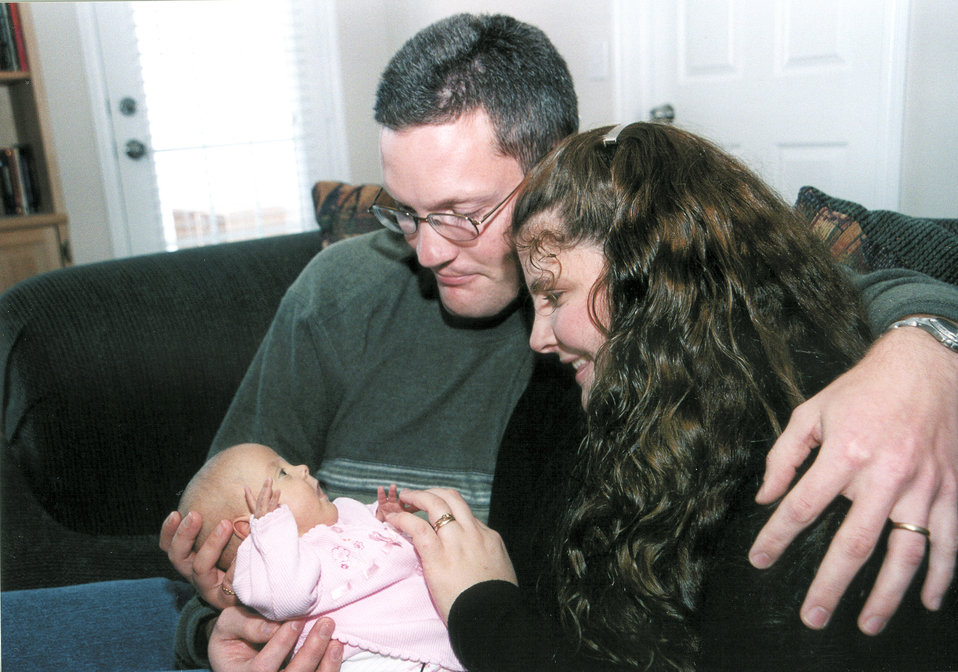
Small miracle -- Dangerously premature baby defies odds

TINKER AIR FORCE BASE, Okla. -- Genevieve Faith Nash, born prematurely, will be 5 months old when she celebrates her first Christmas with her father, Staff Sgt. Gary Nash; mother, Kelley; and her four brothers. Had she been born on schedule, she would be just 6 weeks old.